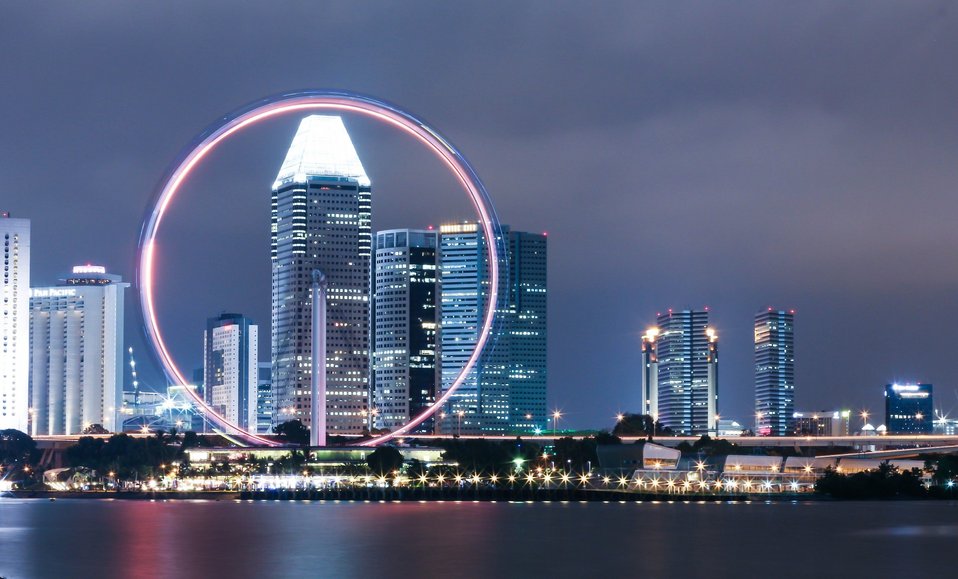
Singapore flyer

The singapore flyer in front of suntec city.